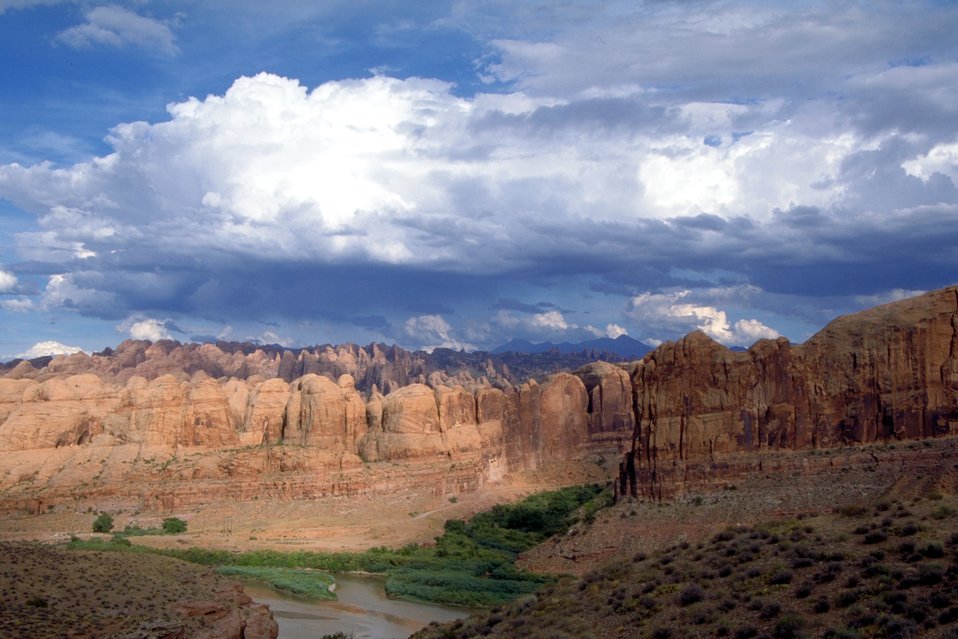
Slickrock and clouds along the Colorado River near Moab, Utah.